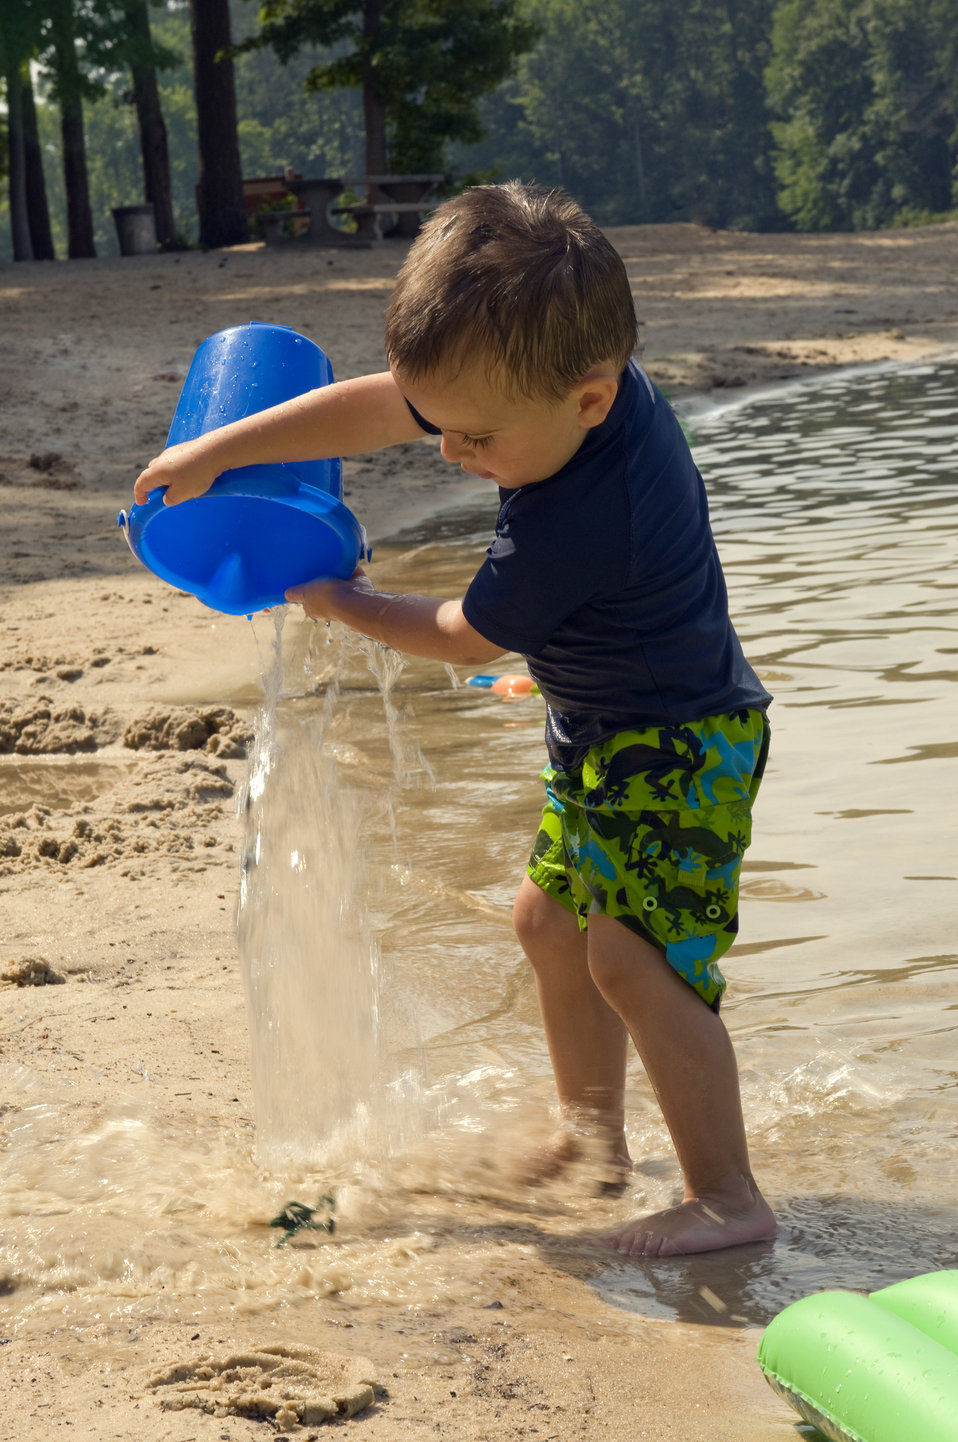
This young boy was holding a water-filled toy bucket, which he was dumping on the sand at the water's edge. Sunscreen had been applied to his minimally-exposed skin, and he was wearing a darkly-colored shirt in order to prevent overexposure to the sun's harmful ultraviolet rays.